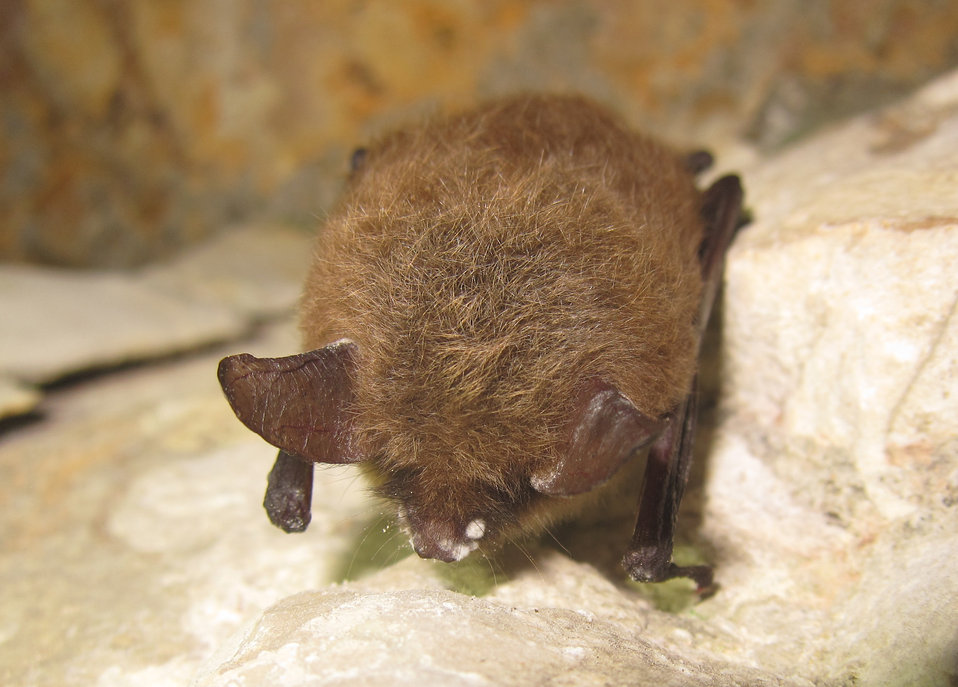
Northern long-eared bat with visible symptoms of WNS

Myotis septentrionalis, northern myotis (Vespertilionidae) showing signs of White Nose Syndrome (WNS). LaSalle County, Illinois. January 2013